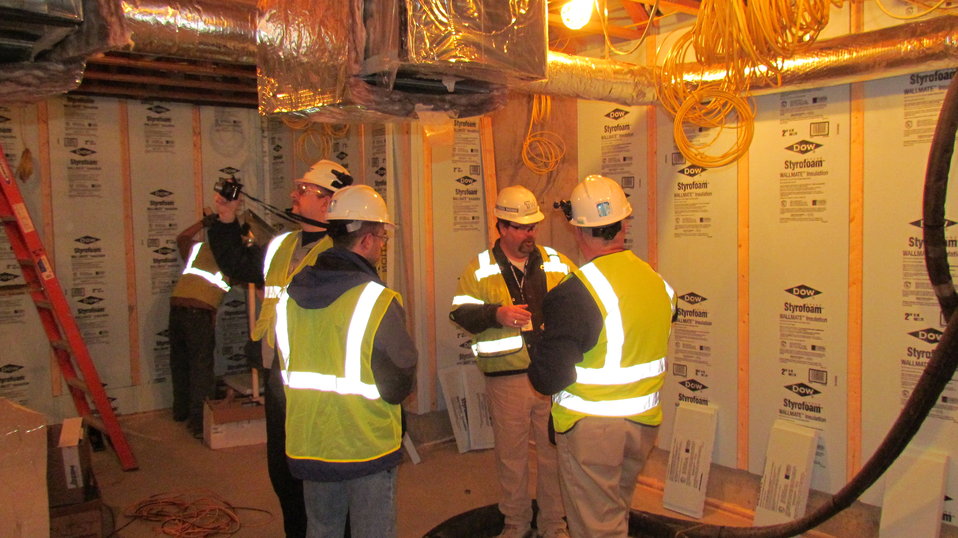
Tour of NZERTF by NIST fire researchers interested in installation of basement insulation system.